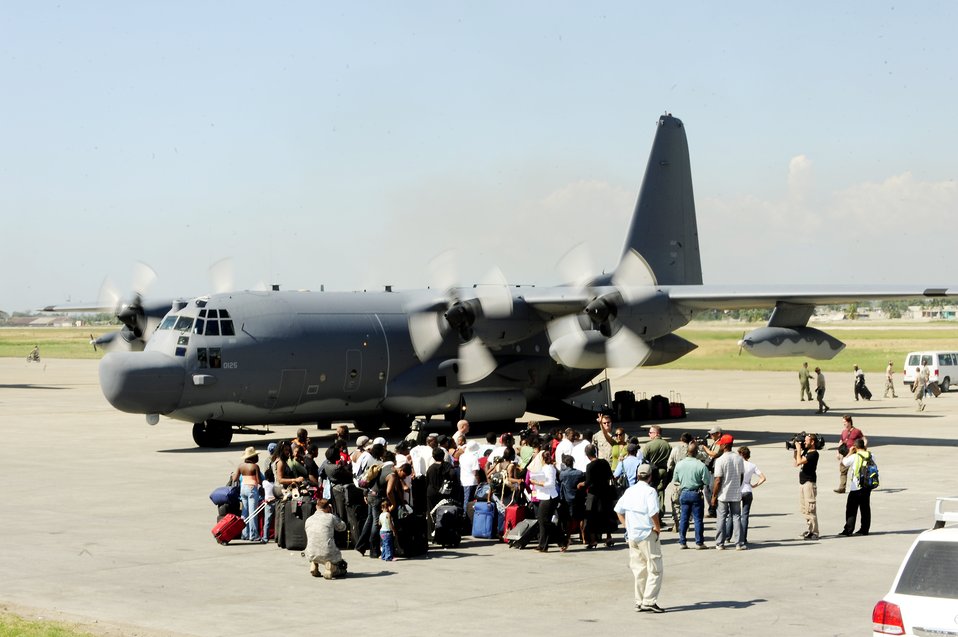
Haiti earthquake relief

U.S. citizens living in Haiti wait to board a C-130 Hercules that will transport them back to the U.S. Jan. 15, 2010, at the Port-Au-Prince airport, Haiti. Department of Defense assets have been dispatched to Haiti to assist with humanitarian assistance and disaster relief after a magnitude 7 earthquake hit the country Jan. 12, 2010.